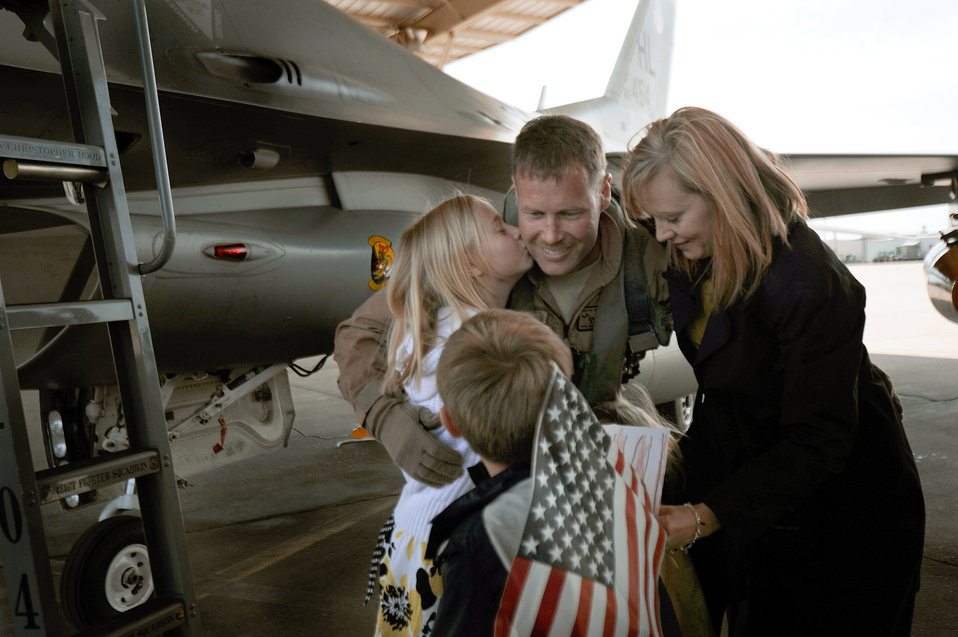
Airmen arrive

Col. William Bailey greets his wife and children upon his arrival April 15, 2011, at Hill Air Force Base, Utah. Colonel Bailey is the commander of the 4th Fighter Squadron and an F-16 Fighting Falcon pilot. He led six jets as the first of their team to return from a six-month deployment to Bagram Air Base, Afghanistan.